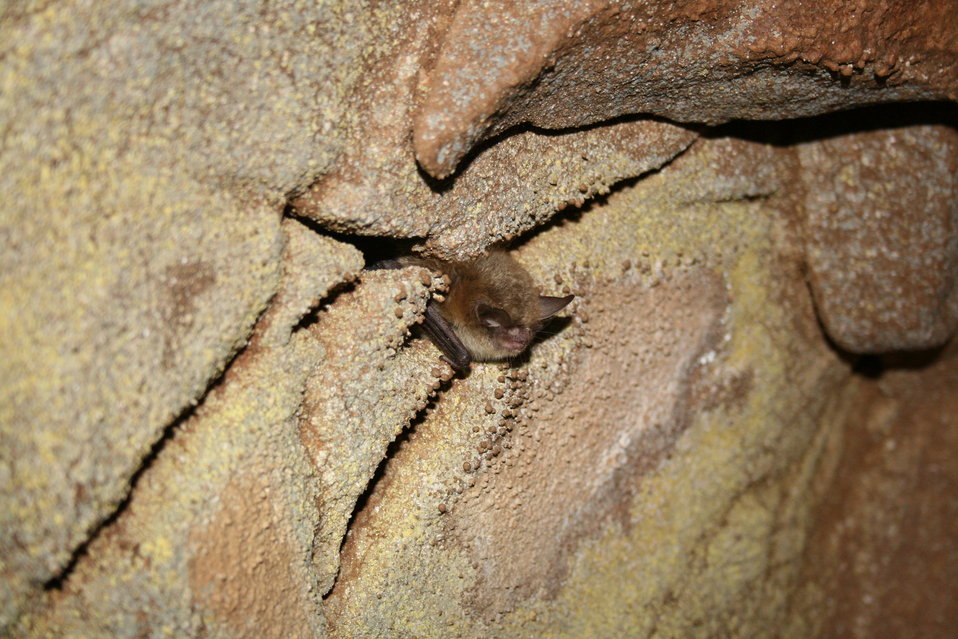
Northern long-eared bat

Hibernating Northern long-eared bat (Myotis septentrionalis)